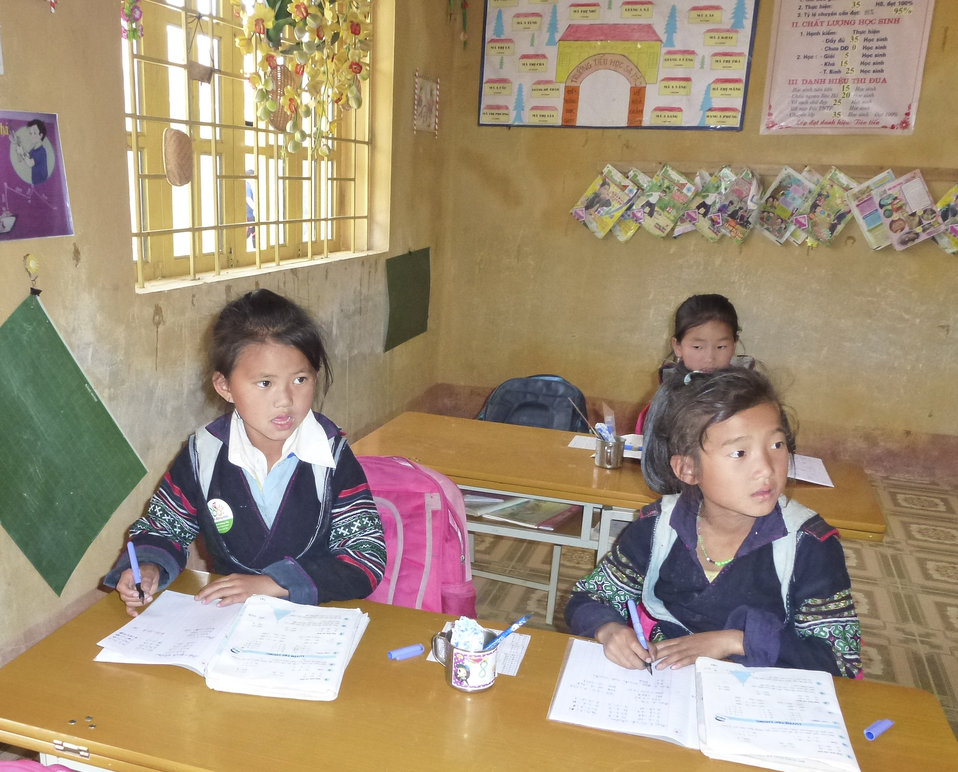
USAID supports deworming medication for school children in Sa Pa district of Lao Cai province

May 13, 2014.